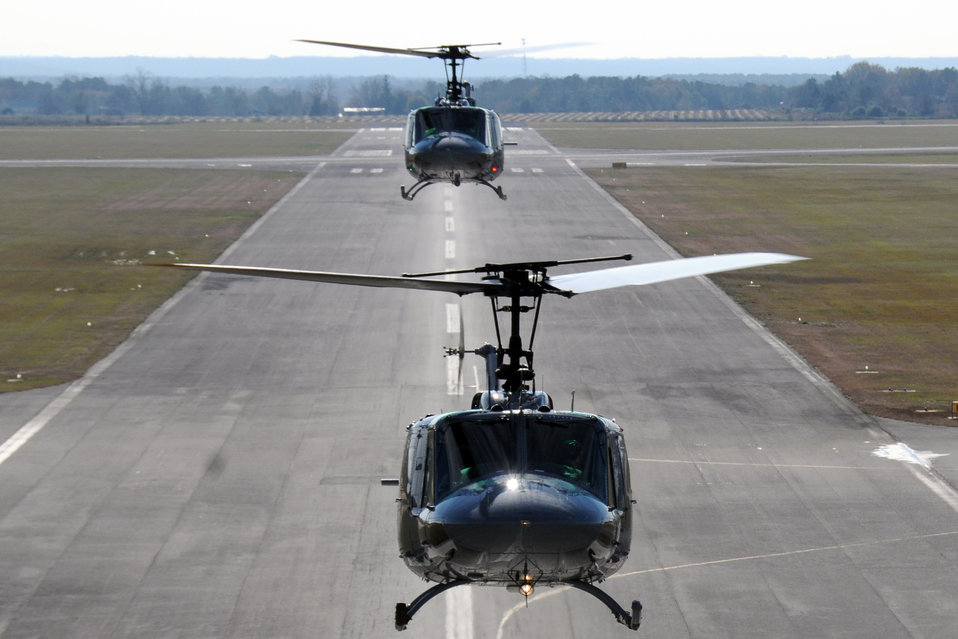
Helicopter training

Students from the 23rd Flying Training Squadron at Fort Rucker, Ala., piloting UH-1H Iroquois helicopters, practice formation-flight patterns. The 23rd FTS is the third and final phase of undergraduate pilot training before the student pilots can obtain their wings. It is the Air Force's primary source of helicopter pilot training for special operations, combat search and rescue, missile support and distinguished visitor airlift missions.